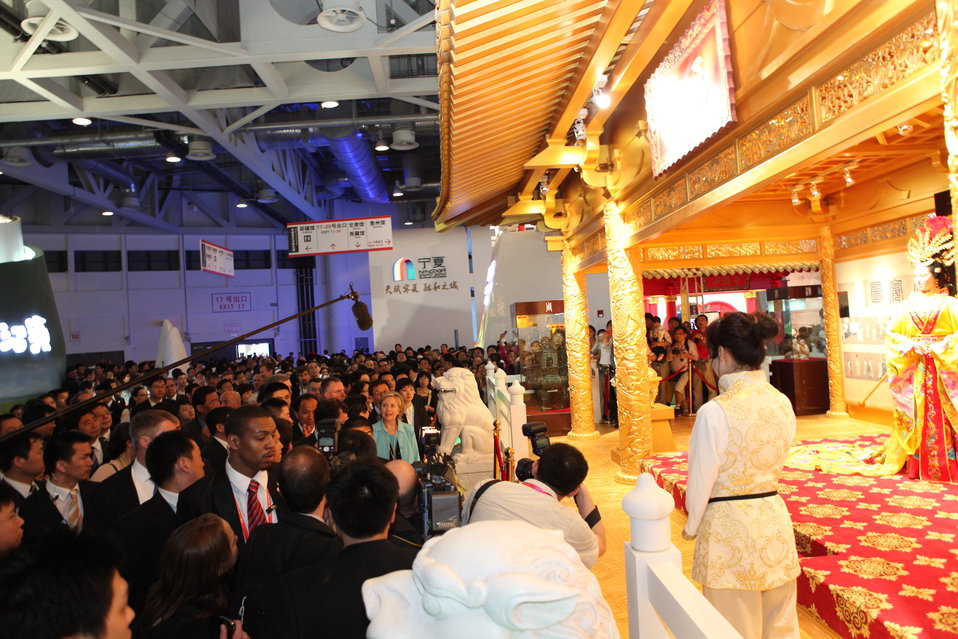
Secretary Clinton Visits the China Pavilion

U.S. Secretary of State Hillary Rodham Clinton visits the China Pavilion at the 2010 Shanghai Expo in Shanghai, China, May 22, 2010.